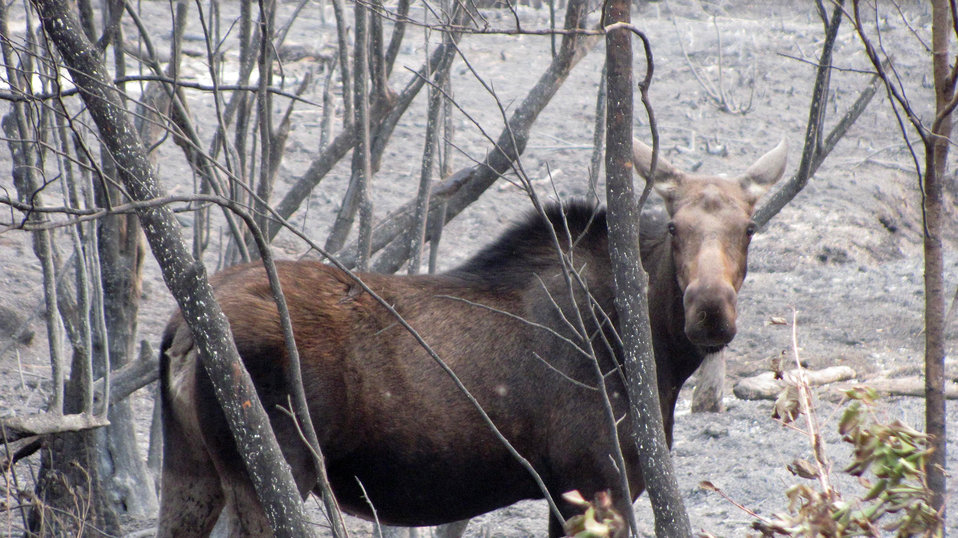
A moose wanders in a crown fire burn at the Lolo Creek Fire. The ground vegetation in the forest has been completely incinerated and willows that grow in the creek bottom have been completely burned. The Lolo Creek Fire in the Lolo National Forest near Lolo, MT began on Aug. 18, 2013 by lightning has consumed approximately 10,892 acres and is 47% contained.